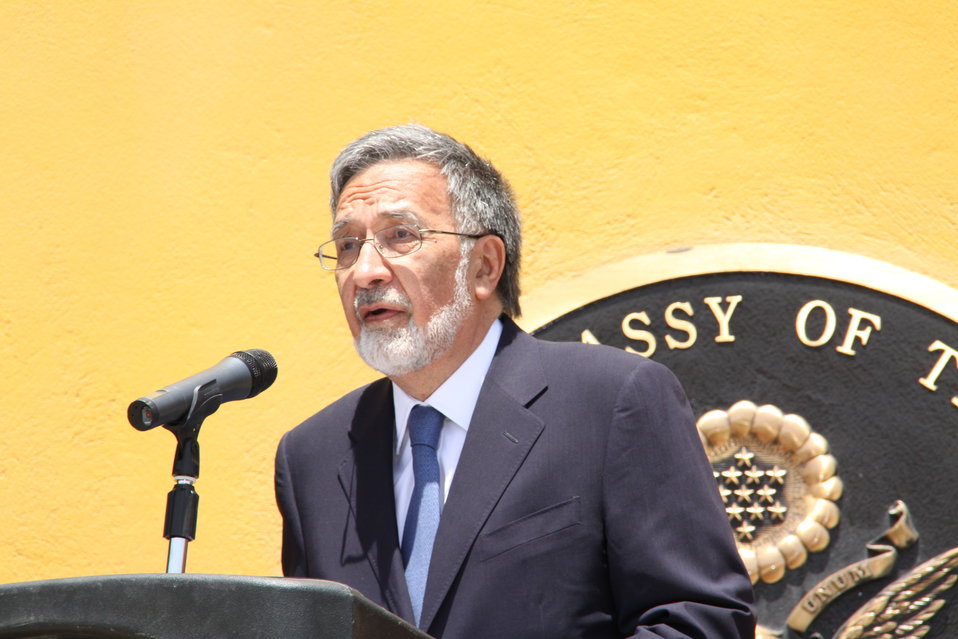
Kabul Official July 4th Celebration